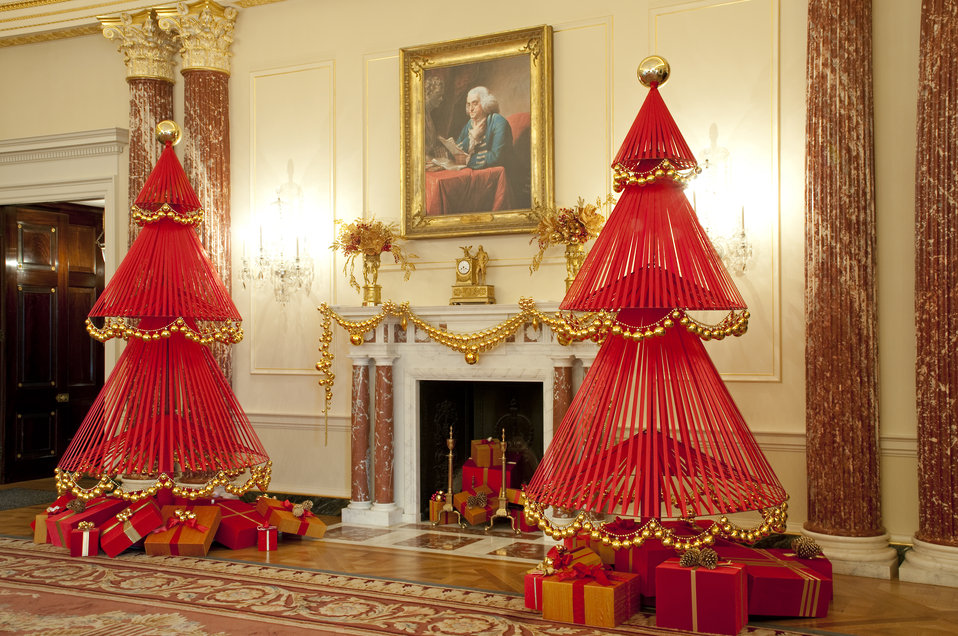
The U.S. Department of State Partners With Time Inc. and InStyle To Decorate the Benjamin Franklin State Dining Room

The U.S. Department of State partners with Time Inc. and InStyle to decorate the Diplomatic Reception Rooms for the Holidays in December 2010. Pictured in this photo is the Benjamin Franklin State Dining Room.